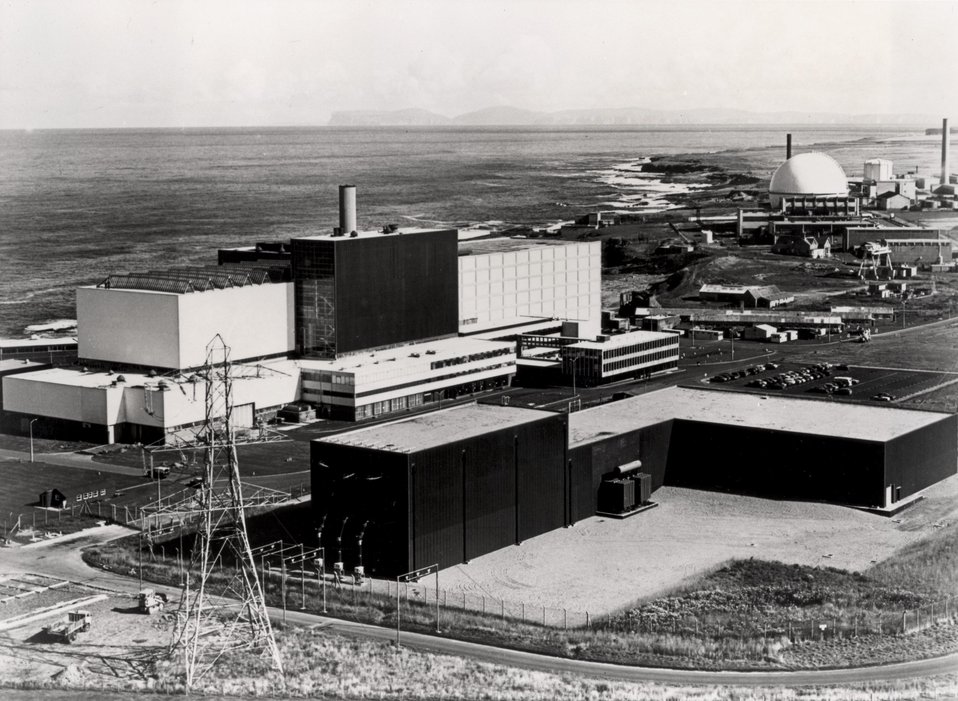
The United States is not alone in developing liquid metal fast breeder reactor technology. Plants are already operating in France, the Soviet Union and the United Kingdom; West Germany and Japan should complete theirs before the U.S. Shown here is the 250-MWe Dounreay prototype fast reactor in Scottland (large white and black building) which has been generating electricity since 1975. c. 1979